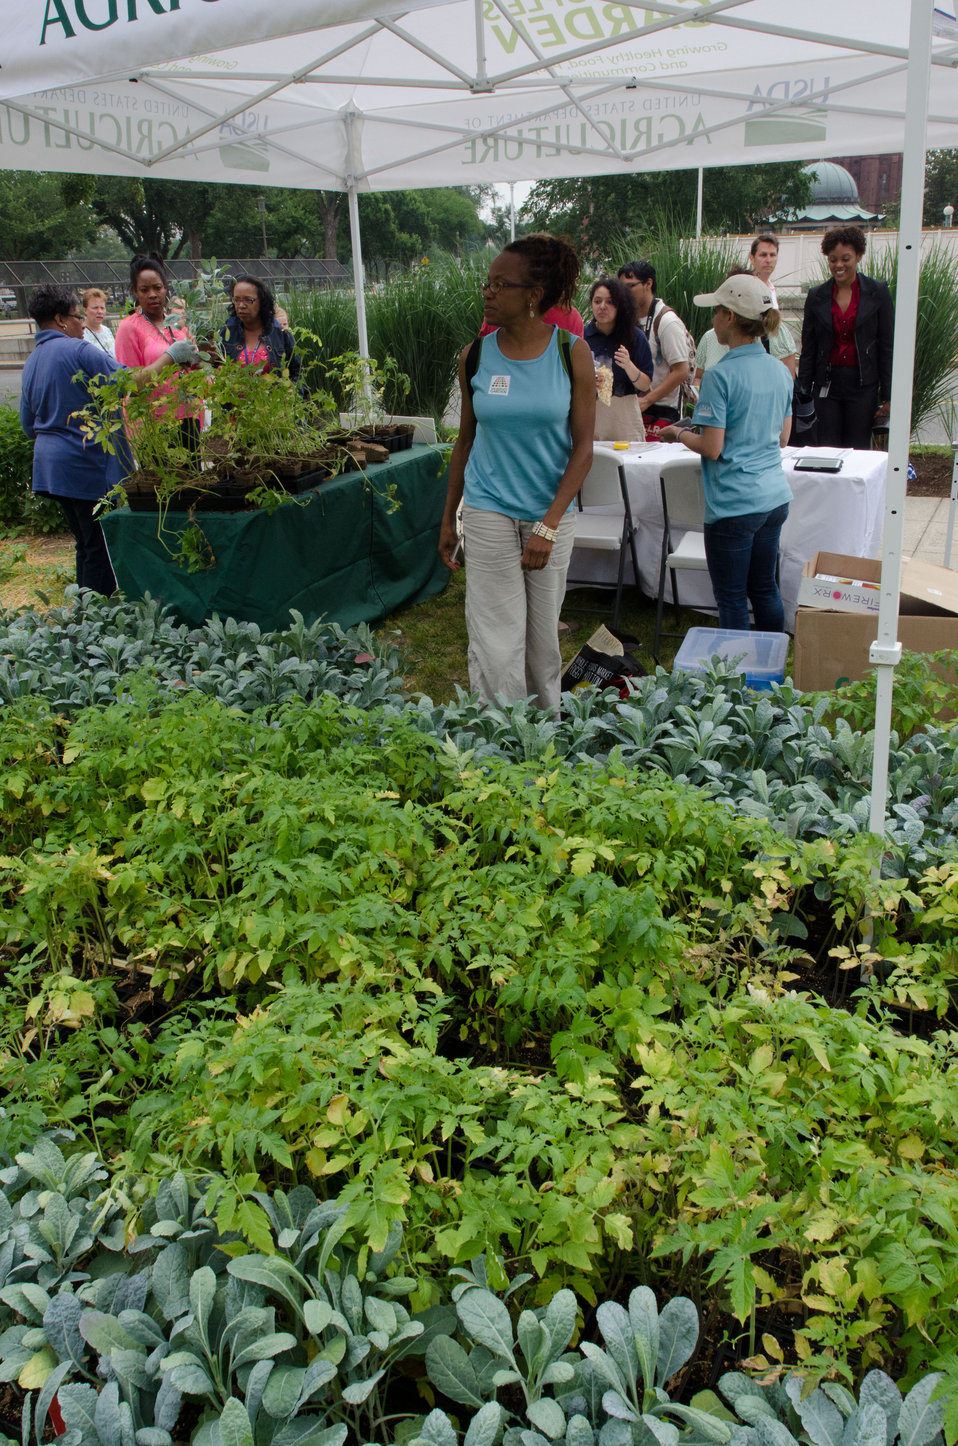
U.S. Department of Agriculture, Departmental Management, Peoples Garden Project Manager Leslie Burks supervises the giveaway of hundreds of fruit and vegetable seedlings to encourage community gardening and to share the harvest with those in need, at the U.S. Department of Agriculture (USDA) Fresh vegetables from C & T Produce at the U.S. Department of Agriculture (USDA) summer farmers market opening of the 17th season at the USDA Whitten Building east parking lot in Washington, D.C., on Friday, May 31, 2012. This year's theme is Grow, Healthy, Eat Healthy & Be Healthy. USDA and Fuel Up to Play 60, in partnership with the National Dairy Council and the National Football League, invited residence, visitors and local school children to participate in opening day activities. Hip Hop Public Health featuring Easy A.D. from Cold Crush Brothers and disk jockey Artie Green play music and invite people to get up on stage to dance or hula hoop to get active. D.C. Truck Farm help people know from what plants, that certain herbs, fruit and produce come from by giving tail-gate tours of the garden growing in the bed of their pickup truck. The Peoples Garden Initiative and USDA Executive Master Gardeners gave away a variety of fruit and produce seedlings to include the Tomato ‘Abraham Lincoln’ in celebration of the USDA 150th Anniversary and to share their harvest. New features for 2012 include an on-site sign language interpreter, a hand washing station, and a USDA-certified organic vendor. Other products selling today are fresh fruits, vegetables, herbs, baked goods, meats, kettle popcorn, local honey, hand-made soap and more.